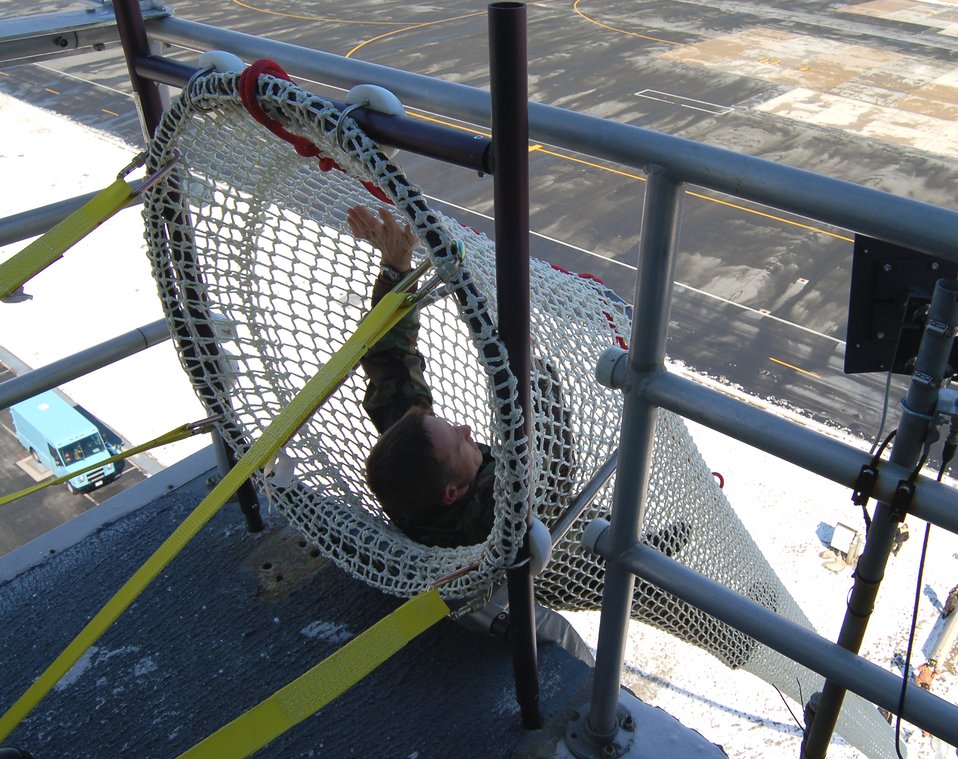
Straight 'chute' to safety

Master Sgt. Thomas Scheving begins his descent in a Baker Life Chute from the catwalk of the Dover Air Force Base, Del., air traffic control tower March 8 during a fire drill. The chute was installed to allow controllers a safe descent to the ground in the event of an emergency. Once in the chute, the person keeps his body straight, hands overhead, and controls the rate of descent with his feet. Sergeant Scheving is the chief tower controller with the 436th Operations Support Squadron.